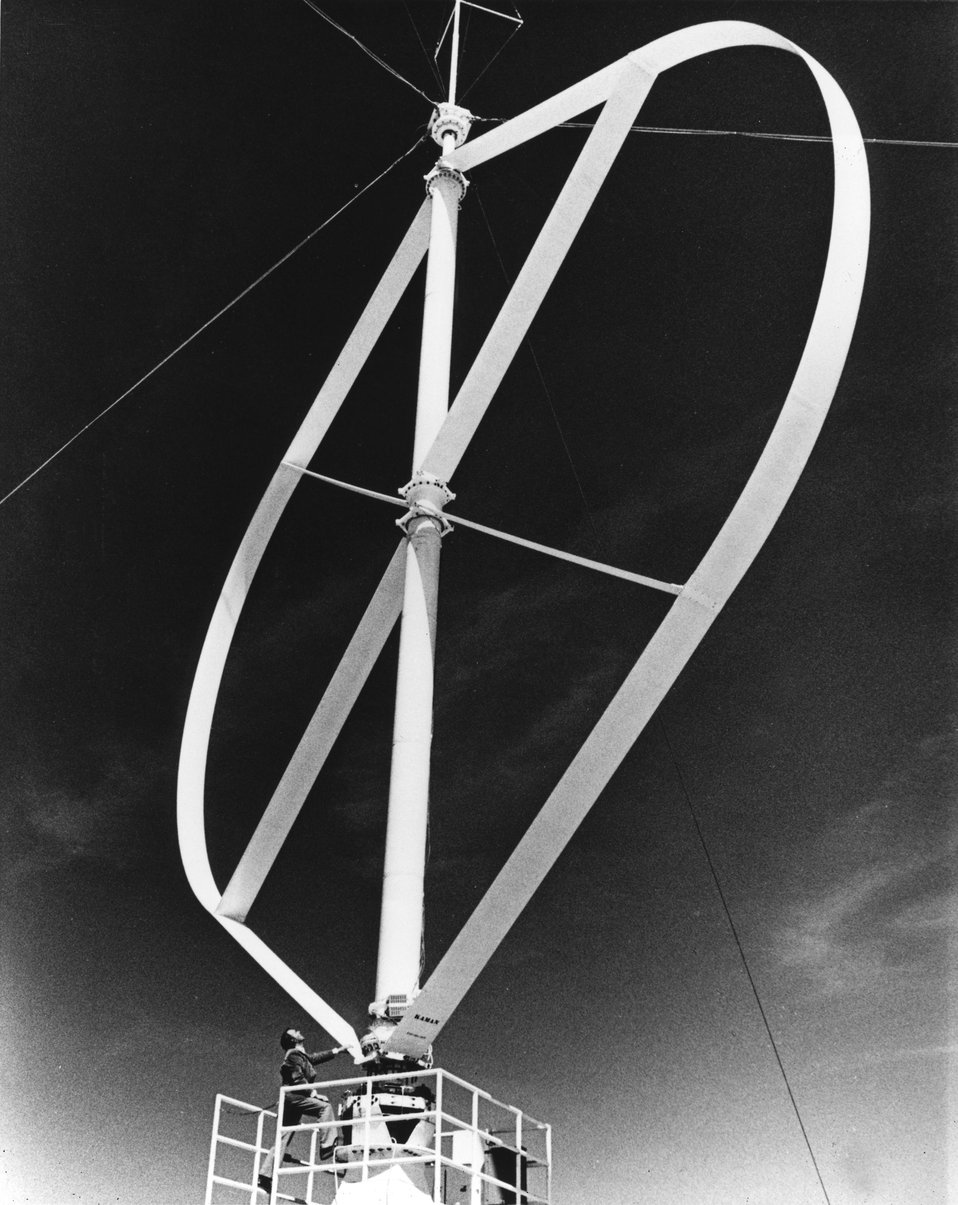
A seven-story-high vertical axis wind turbine generator has been built at the Energy Research and Development Administration's (ERDA) Sandia Laboratories, Albuquerque, New Mexico. c. 1977